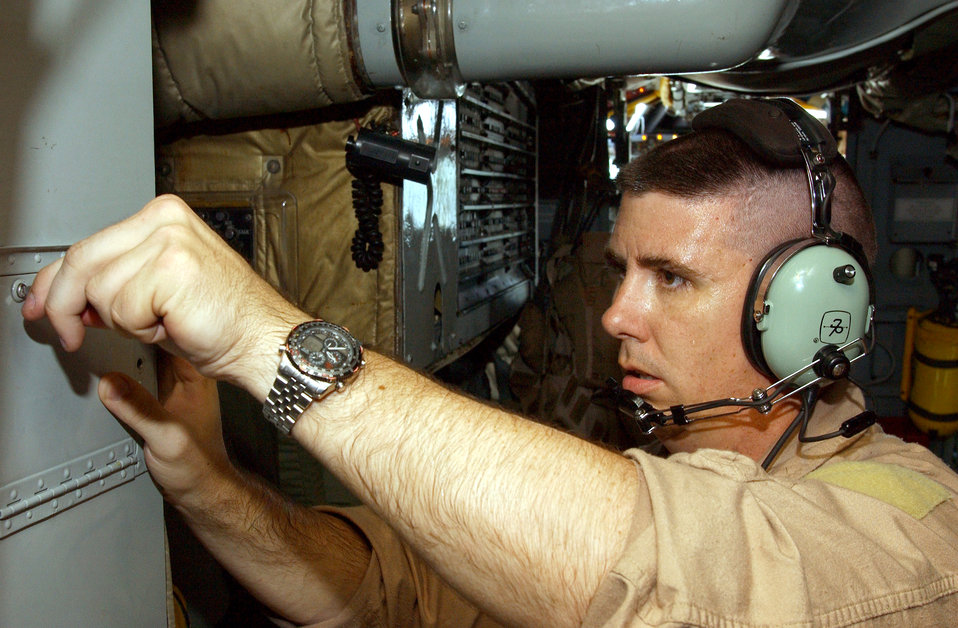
Data security

OPERATION IRAQI FREEDOM -- A 40th Expeditionary Bomb Squadron electronic warfare officer secures a data compartment prior to a B-52 bombing mission over Iraq, April 11. Operation Iraqi Freedom is the multinational coalition effort to liberate the Iraqi people, eliminate Iraqi's weapons of mass destruction, and end the regime of Saddam Hussein.